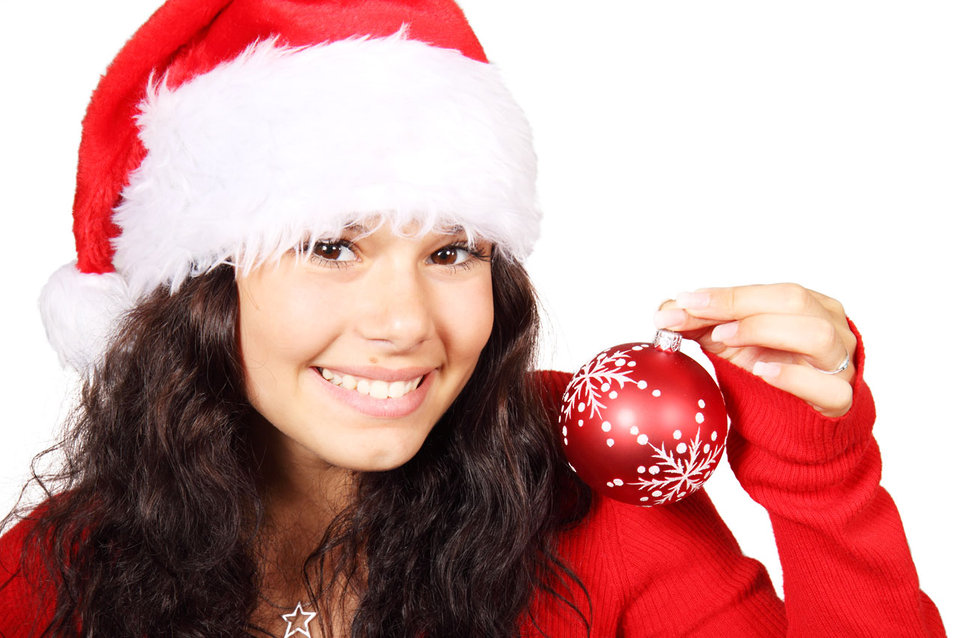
Santa claus girl

Young woman as santa with red christmas bauble.